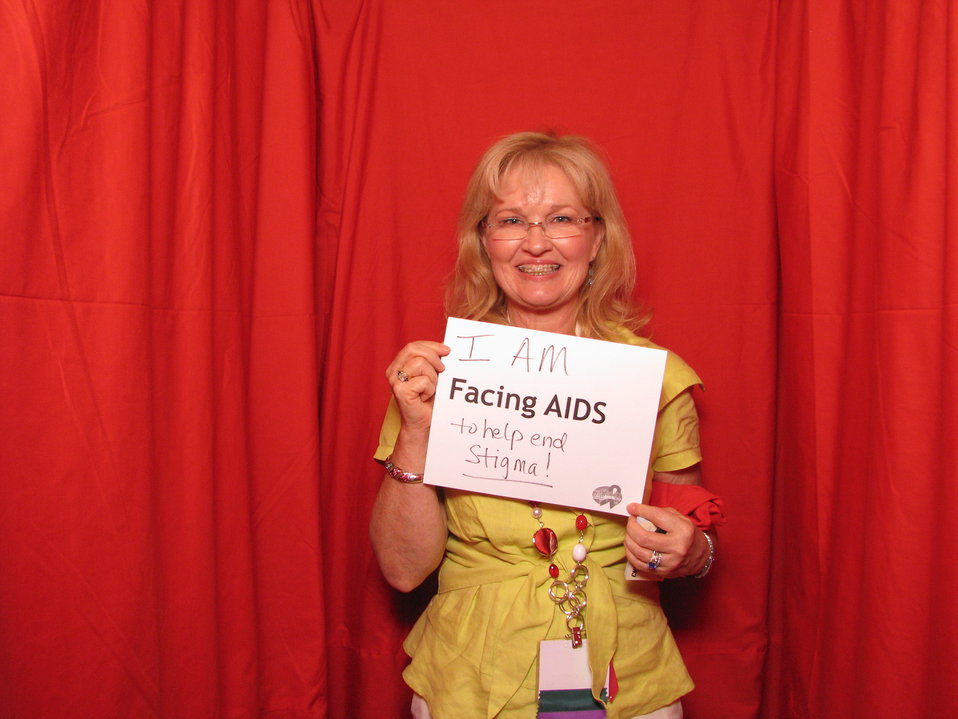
I AM FACING AIDS to help end stigma!

From the AIDS.gov photo booth at the U.S. Conference on AIDS, September 2010 (Orlando, FL).